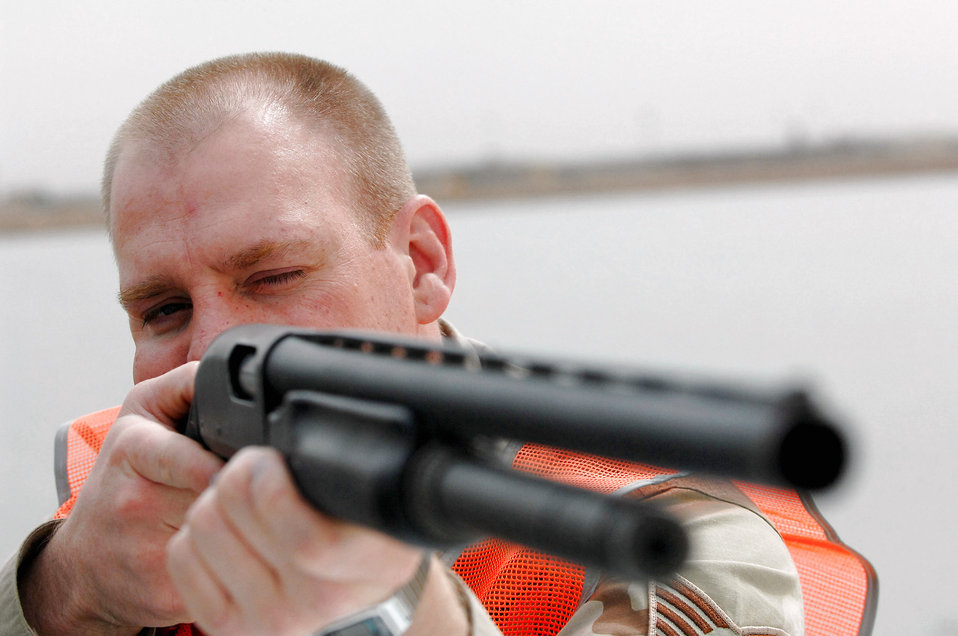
Study of Iraqi birds to help reduce aircraft mishaps

Tech. Sgt. David Young takes aim at a group of gulls to reduce the number of birds at Balad Air Base, Iraq. Collisions between flying birds and aircraft can severely damage aircraft and endanger the lives of pilots. To reduce the number of collisions, members of the 332nd Air Expeditionary Wing Safety Office depredate the birds on the base. On May 3, the remains of whole, depredated birds were shipped from the base to the Smithsonian Institution, National Museum of Natural History, Feather Identification Laboratory in Washington, D.C., to be analyzed by scientists there. This marks the first shipment of whole bird remains to be sent from Iraq to the Smithsonian. Sergeant Young is the 332nd Air Expeditionary Wing noncommissioned officer in charge of flight safety deployed from Elmendorf Air Force Base, Alaska.